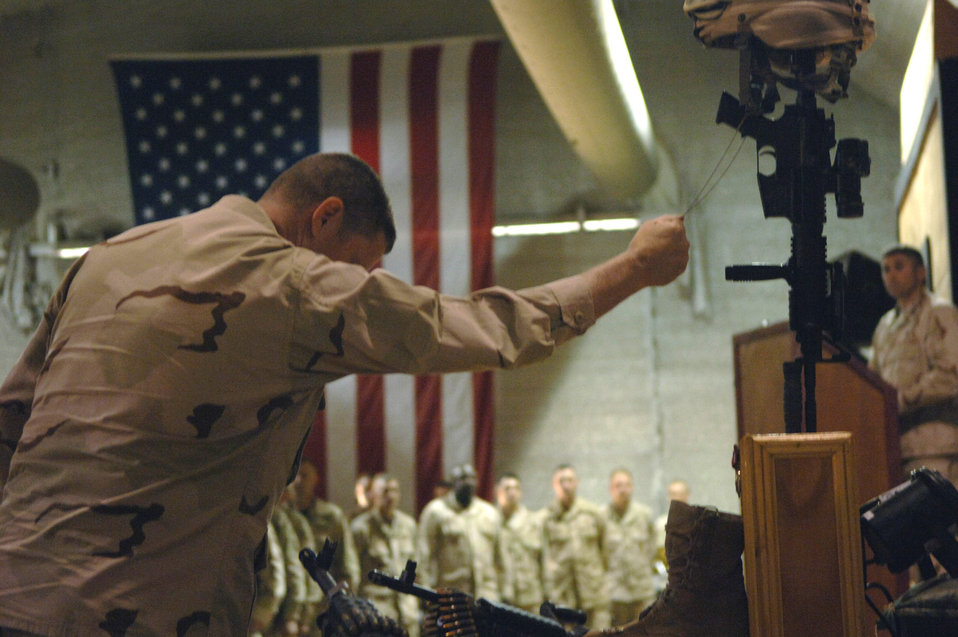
Balad Airmen say goodbye to fallen warrior

Brig. Gen. Robin Rand holds Staff Sgt. John T. Self's dog tags to show respect during Sergeant Self's May 18 memorial ceremony at the town hall at Balad Air Base, Iraq. Sergeant Self died during combat operations May 14 in the Baghdad area.